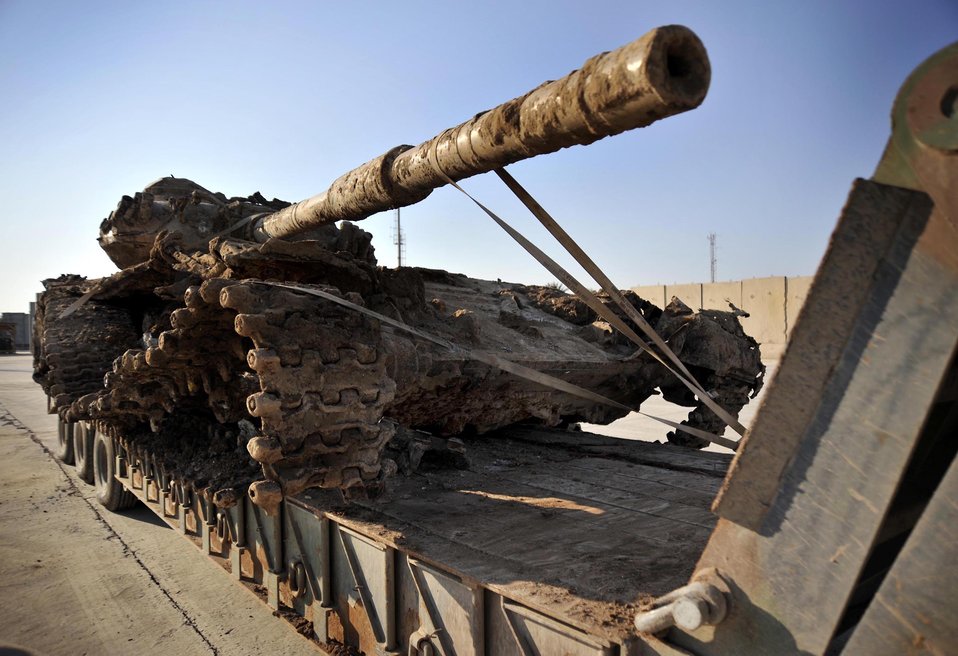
Sather Airmen clear away the debris of war, improve airport safety

An old Iraqi T-72 main Battle Tank sits on a trailer and awaits final disposition after Airmen from the 447th Expeditionary Civil Engineer Squadron and Soldiers from the 503rd Maintenance Company worked together to remove it from the airfield at Sather Air Base, Iraq, where it was buried. The tank was an obstruction to safe airfield operations and had to be removed.